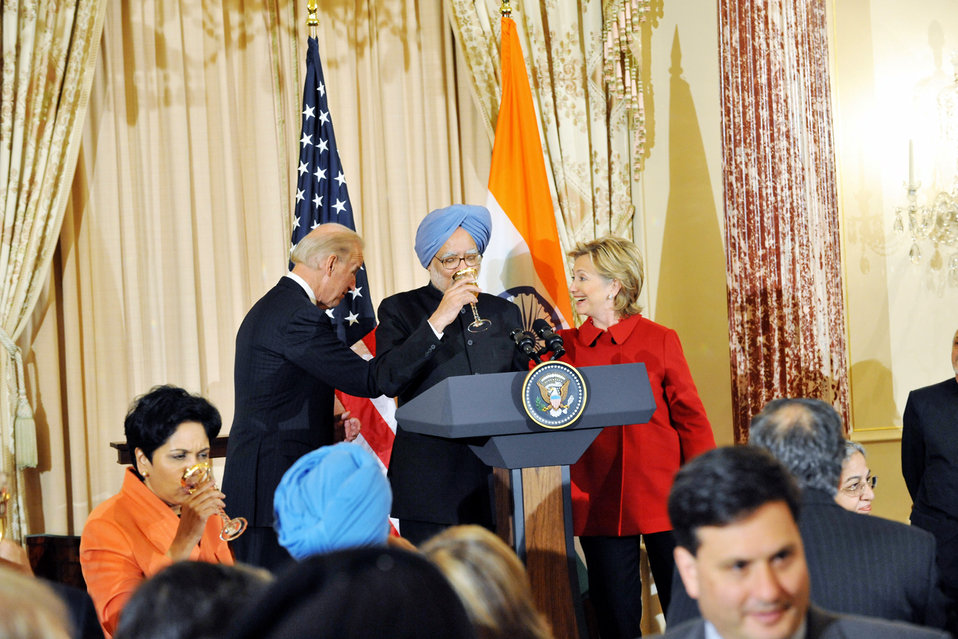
Vice-President Biden, Secretary Clinton Co-Host Social Lunch in Honor of Indian Prime Minister

U.S. Vice-President Joe Biden Dr. Jill Biden co-host a social lunch with U.S. Secretary of State Hillary Rodham Clinton in honor of Indian Prime Minister H.E. Dr. Manmohan Singh and Dr. Gurusharan Kaur at the U.S. Department of State in Washington, DC November 24, 2009.